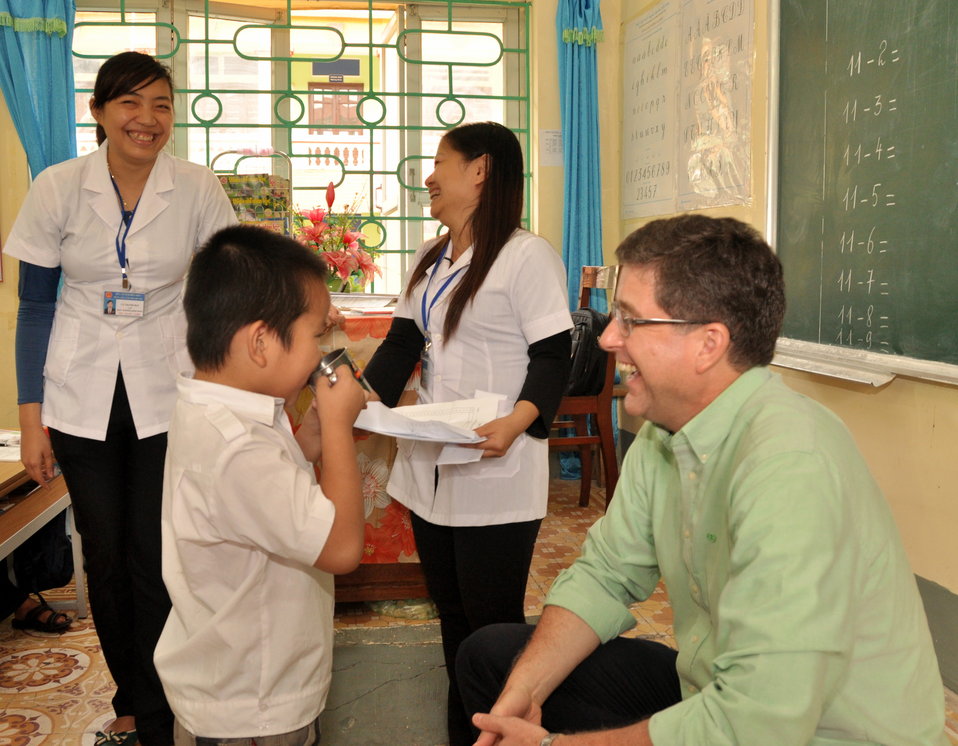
School children receive a dose of deworming medicine in Dien Bien

October 31, 2012